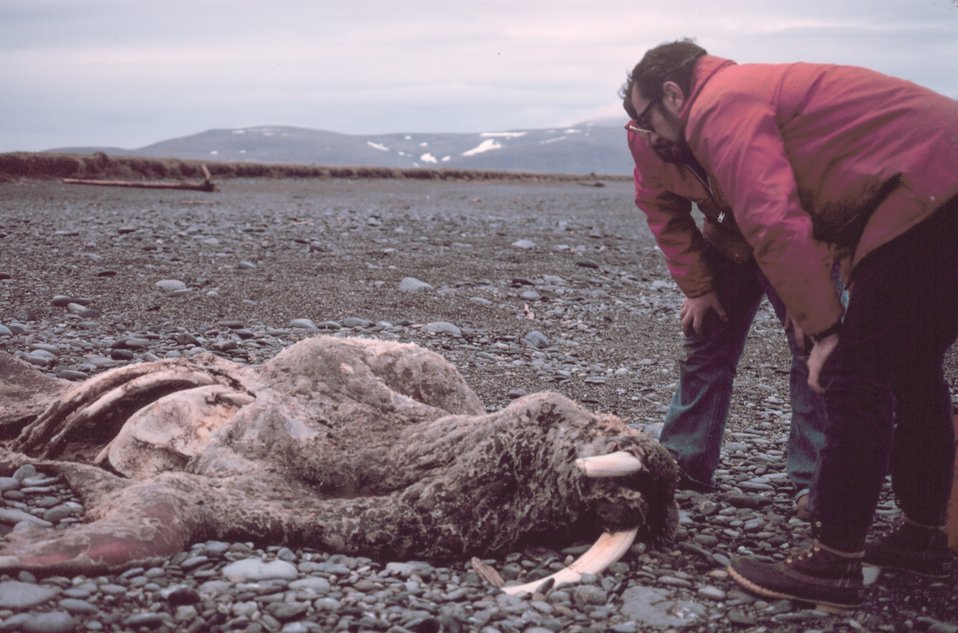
Scientists inspecting a dead walrus.